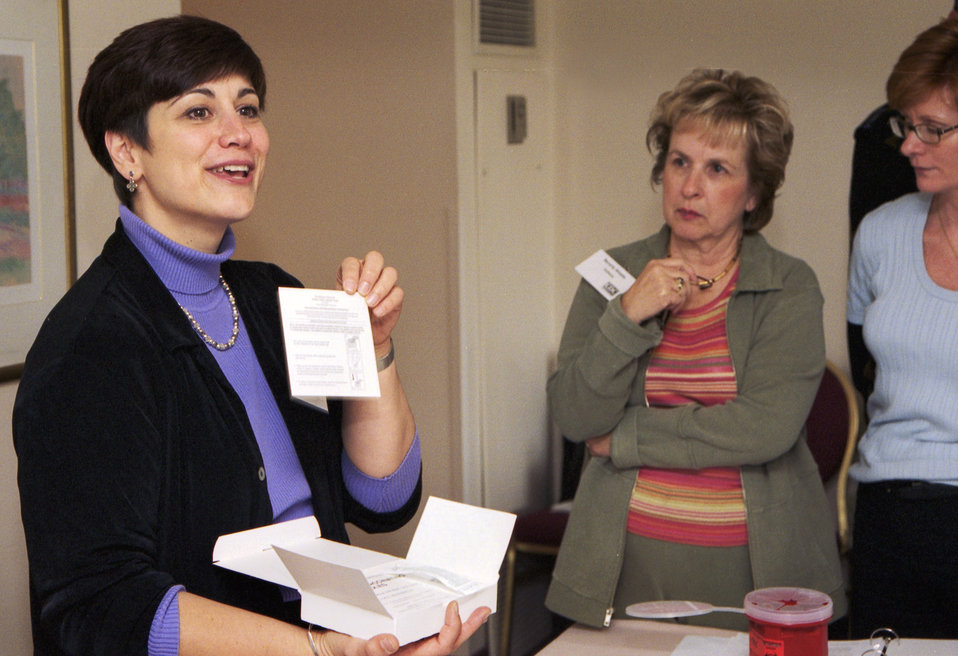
CDC Clinician, Joanne Cono, MD, describes contents of smallpox vaccine kit during the 2002 Vaccinator Workshop.